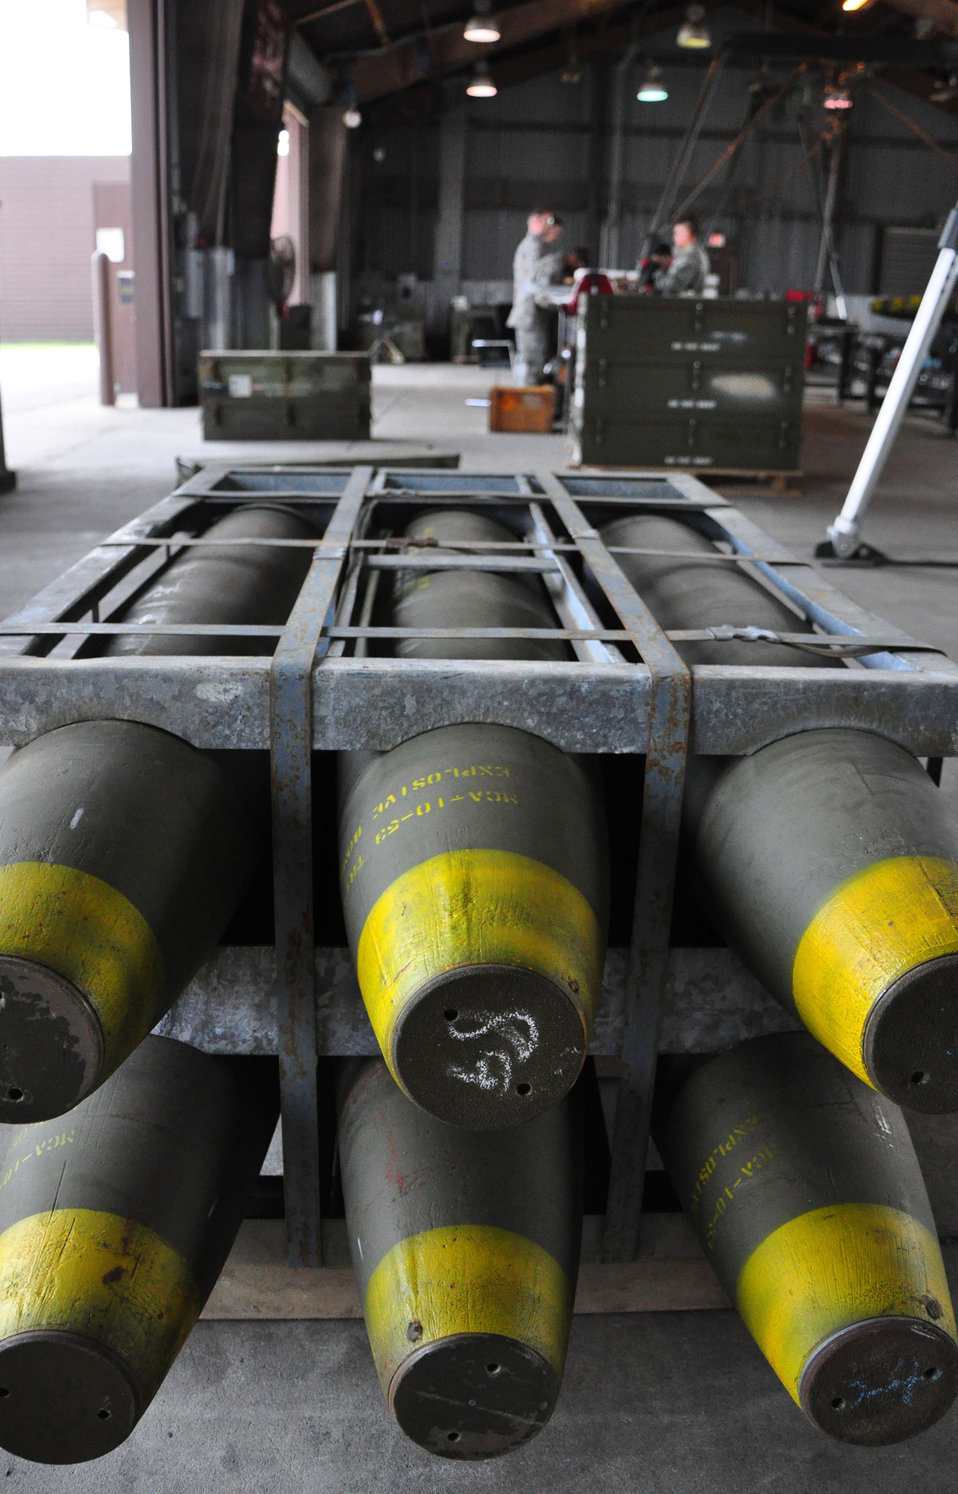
Loading munitions

Airmen at Osan Air Base, South Korea, build bombs May 3, 2011.